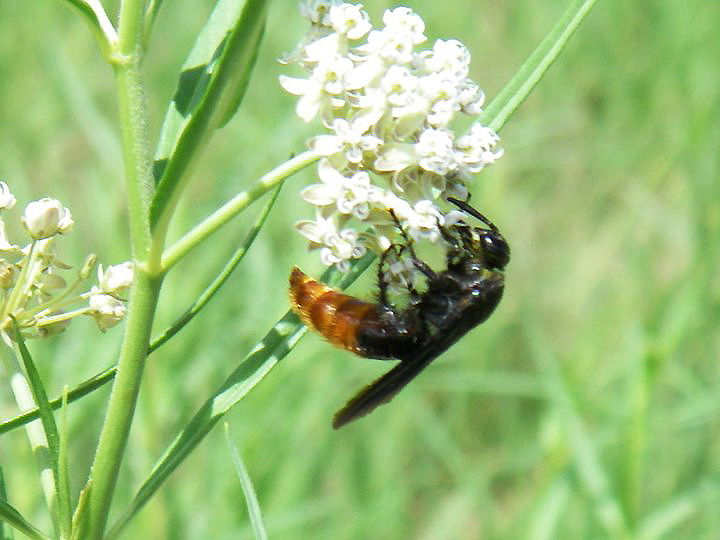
Bee

Dexter National Fish Hatchery and Technology Center